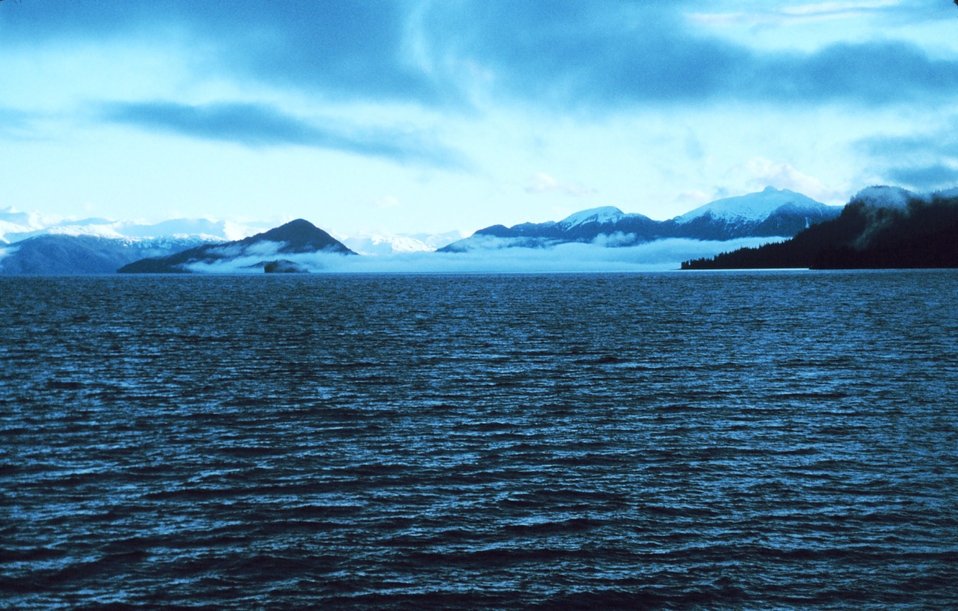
Approaching the Revillagigedo Channel from British Columbia on the RAINIER